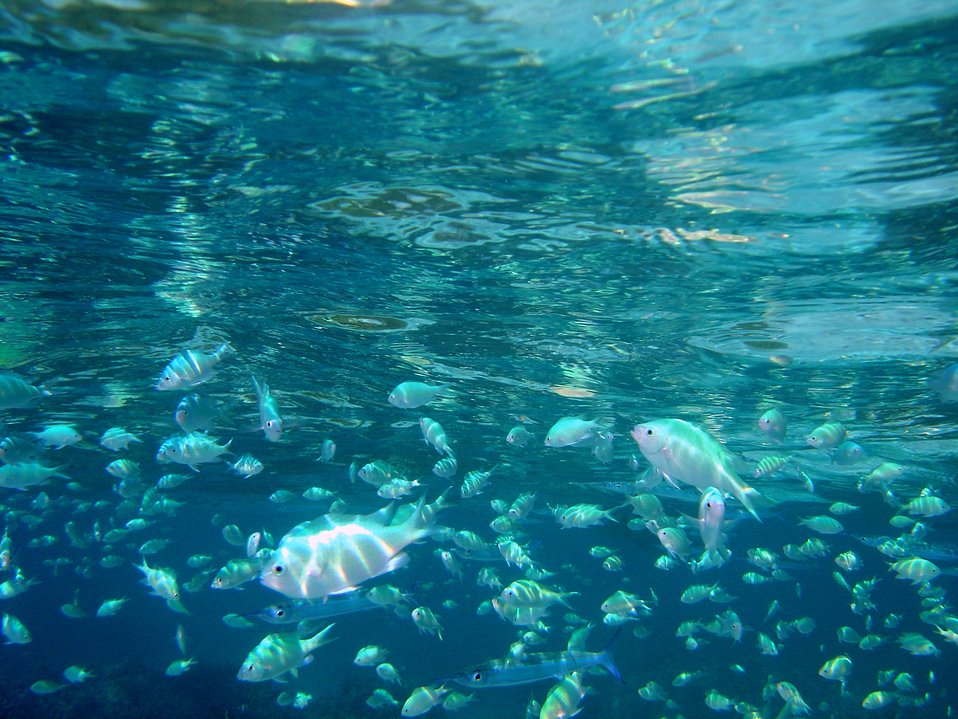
Blue-green chromis (Chromis viridis) with Dussumier's halfbeak (Hyporhamphus dussumieri)